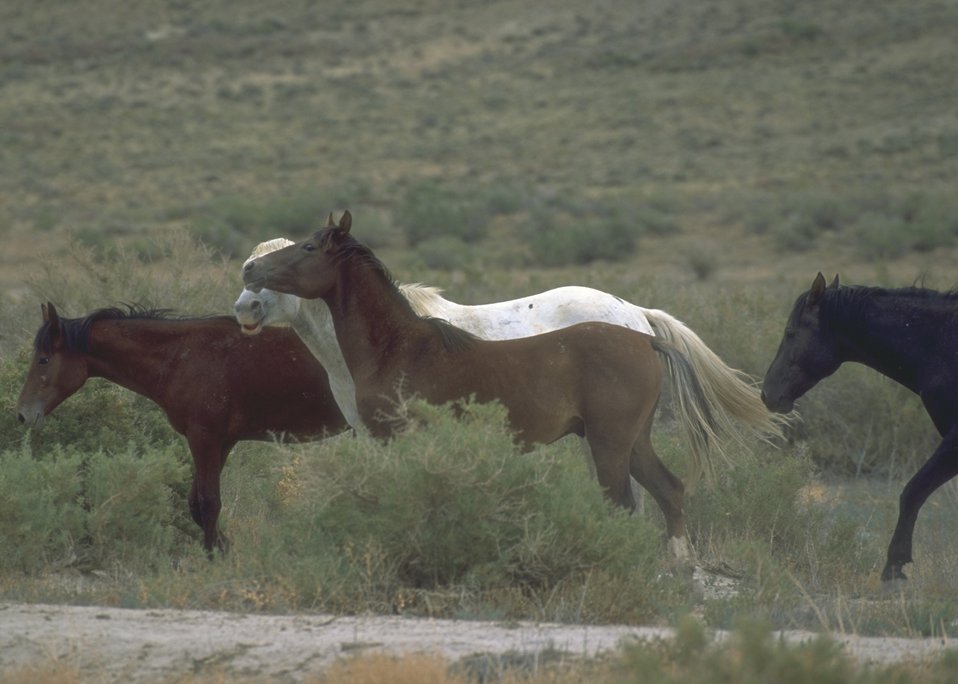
Wild horses, Rock Springs Field Office.